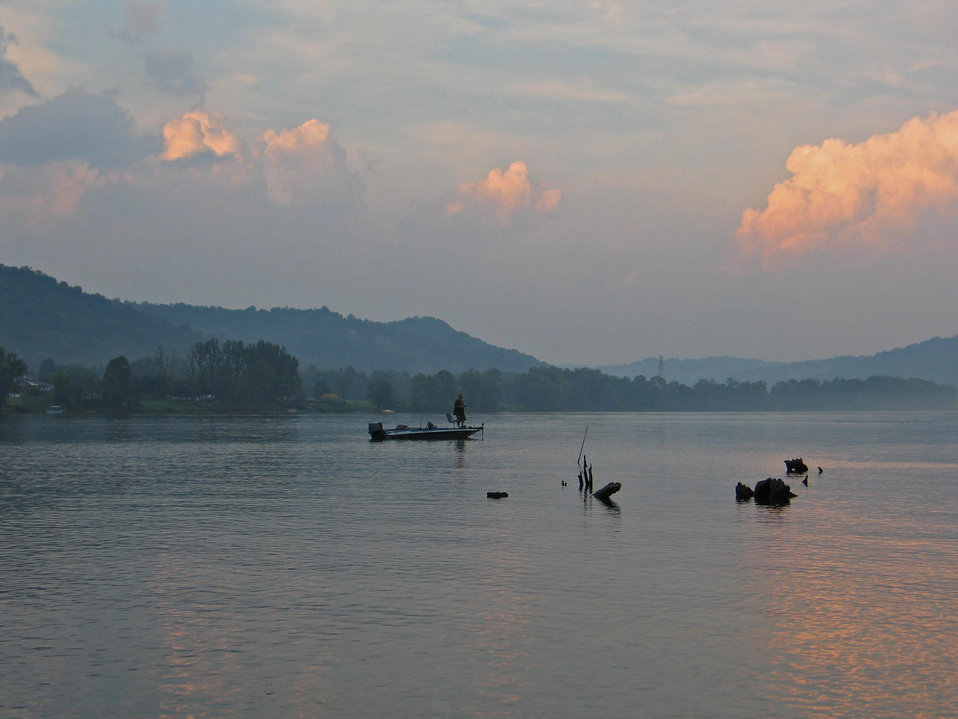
Boat fishing

Ohio River Islands National Wildlife Refuge, WV.